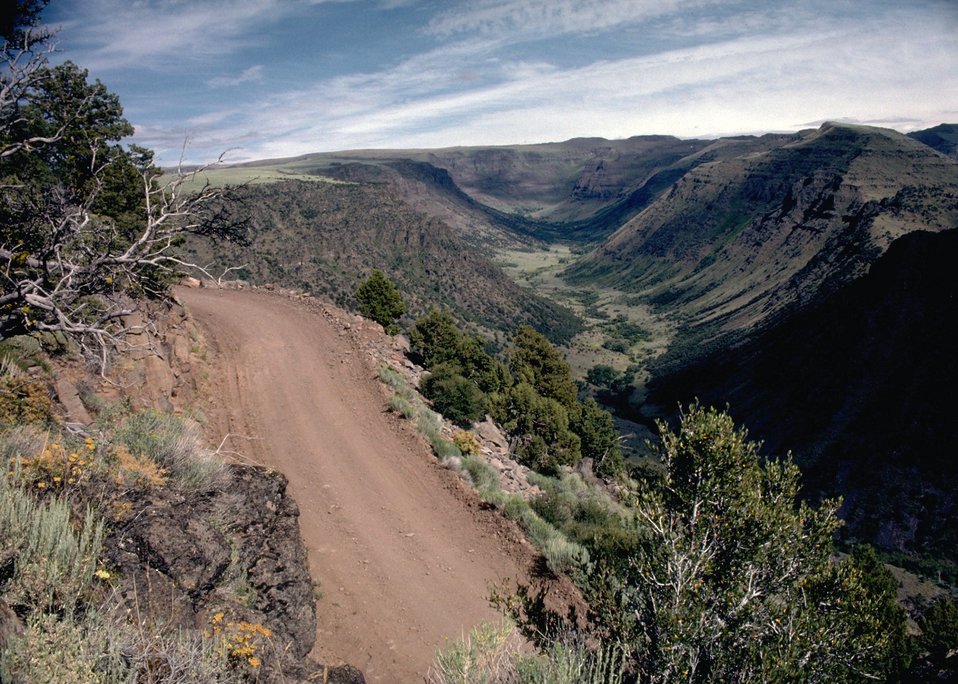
View of the Back Country Byway in Big Indian Gorge from Steens Mountain in Southeastern Oregon.